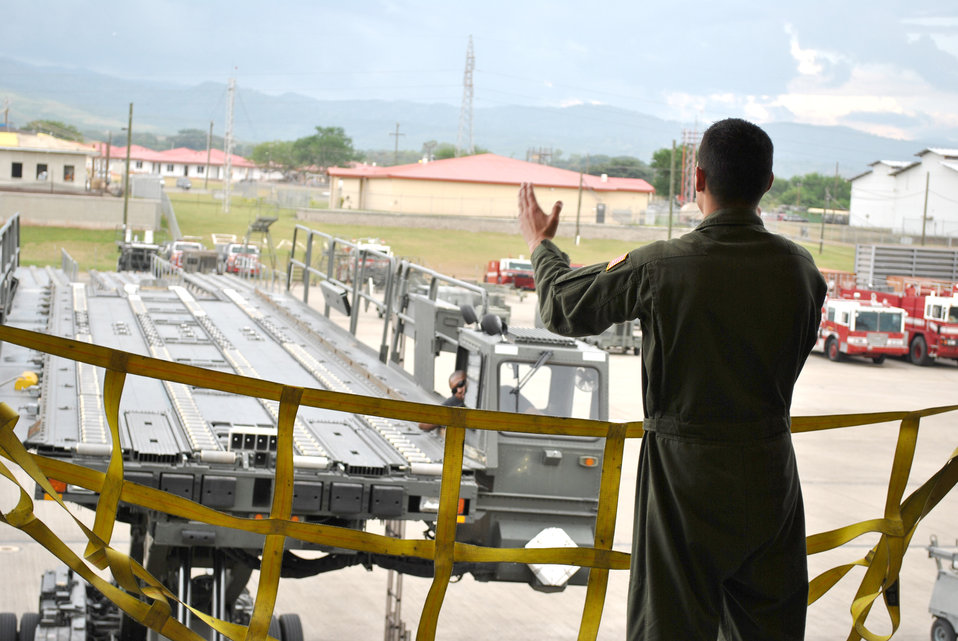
Soto Cano humanitarian

KC-10 Extender aircrew member from Joint Base McGuire-Dix-Lakehurst, N.J., guides in a Tunner close to the doors of the aircraft in order to unload pallets Oct. 25, 2010, at Soto Cano Air Base, Honduras. Two KC-10s from JB McGuire-Dix-Lakenhurst delivered 18 tons of humanitarian aid to be delivered to local charities.